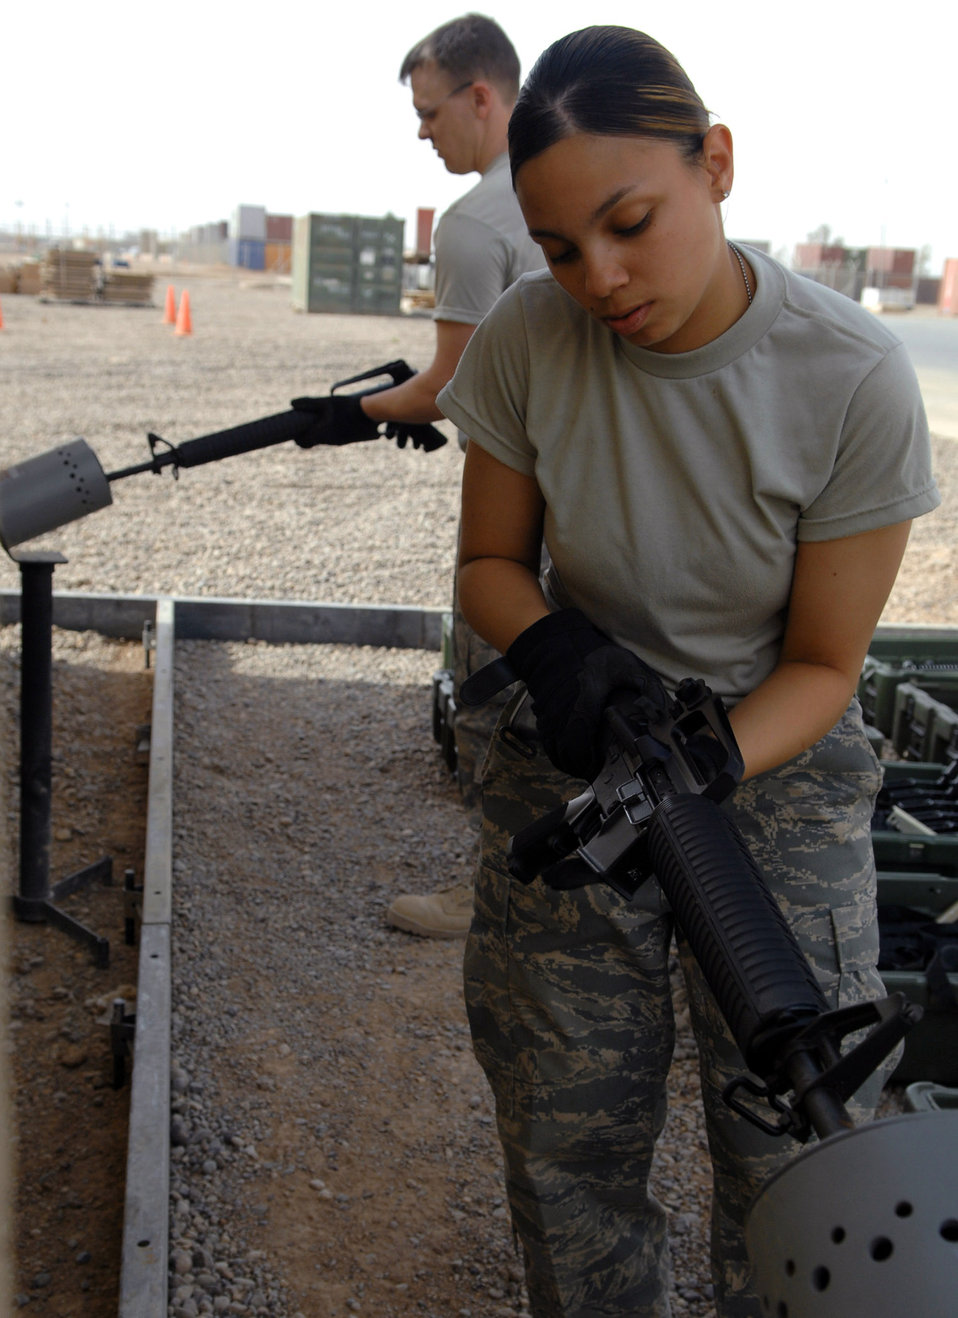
Prepositioning weapons at Balad to save $1.3 million

Airman 1st Class Lianette Williams clears an M-16 rifle in a clearing barrel before turning it into the armory April 5 at Balad Air Base, Iraq. Airman Williams is a 332nd Expeditionary Logistics Readiness Squadron base supply manager deployed from Luke Air Force Base, Ariz.